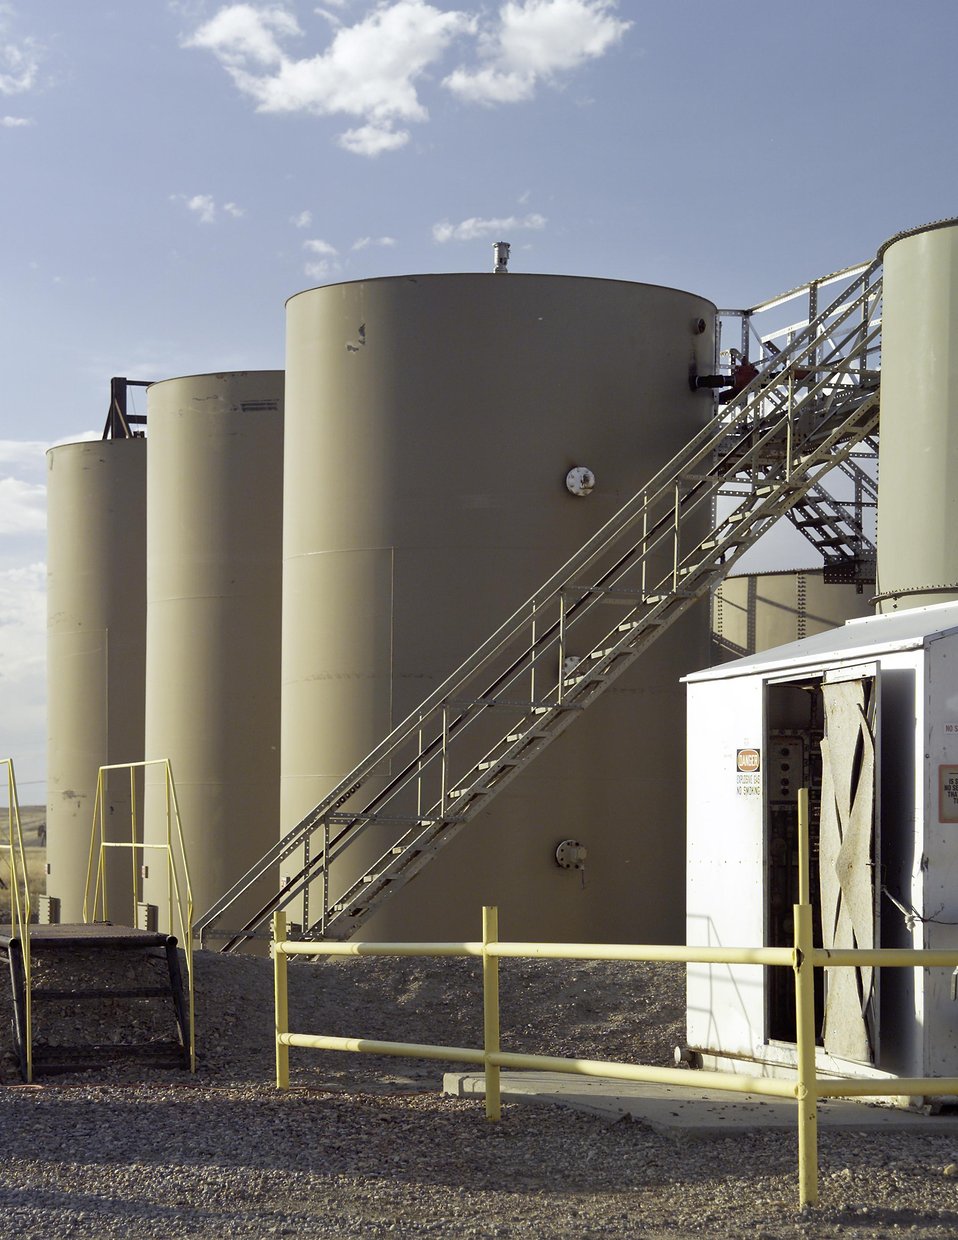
Tank batteries at Naval Petroleum Reserve No.3 (NPR-3) near Casper, Wyoming.

The Rocky Mountain Oilfield Testing Center (RMOTC) is a Department of Energy field test site for emerging and developing technologies to address critical energy issues. The field test site, located on Naval Petroleum Reserve No.3 (NPR-3), is a 10,000-acre site. There are approximately 700 well bores with 600 producing wells ranging in depth from 500 to 5,000 feet.